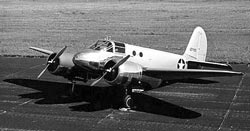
AT-10

In 1940-41 the Beech Aircraft Company designed an advanced multi-engine trainer for ease and speed of manufacture on a large scale and named it the